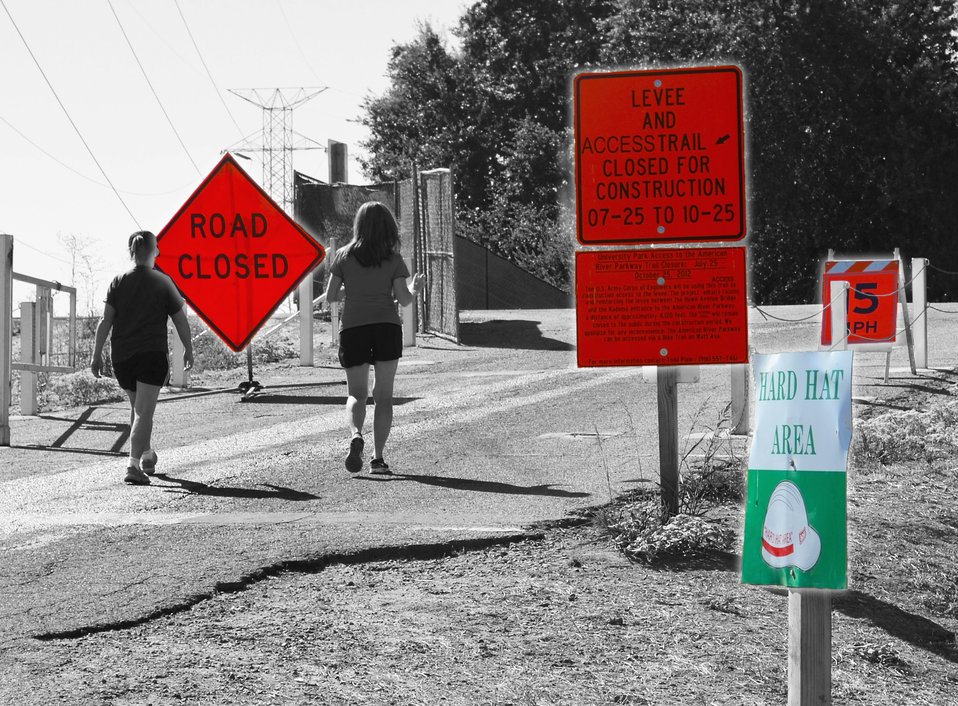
Please heed warning signs at Kadema Drive trail access along the American River in Sacramento, Calif.

Pedestrians make their way onto a 33-mile multi-use trail via the closed Kadema Drive trail access along the American River in Sacramento, Calif., Aug. 28, 2012. Contractors for the U.S. Army Corps of Engineers Sacramento District have made adjustments to fencing and signage to help keep trail users and haul trucks a safe distance from each other. After scheduled completion this October, the project will further reduce flood risk to the area by raising and reinforcing more than 4,000 feet of the levee.